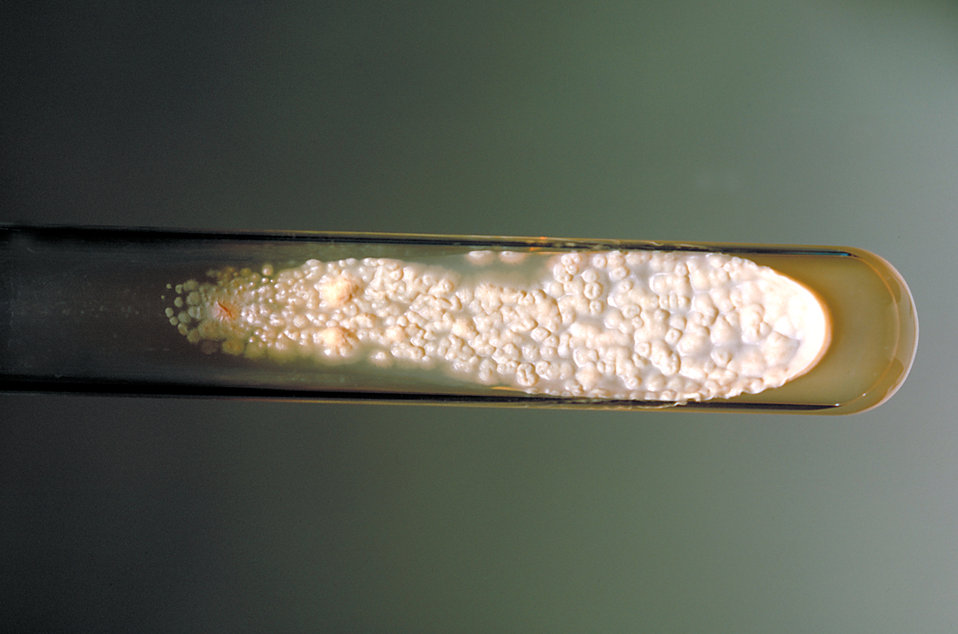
This is a SABHI agar slant culture of the fungus Sporothrix schenckii at 37�C.